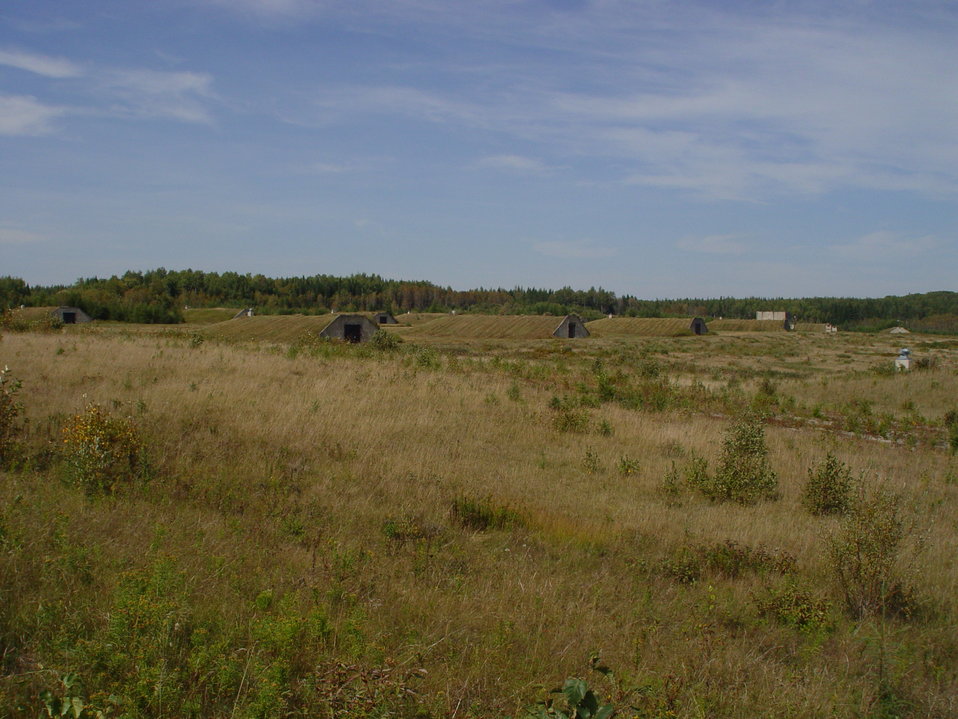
Bunkers at Aroostook NWR

View of the cold war-era bunkers in the rolling grassland setting at Aroostook National Wildlife Refuge